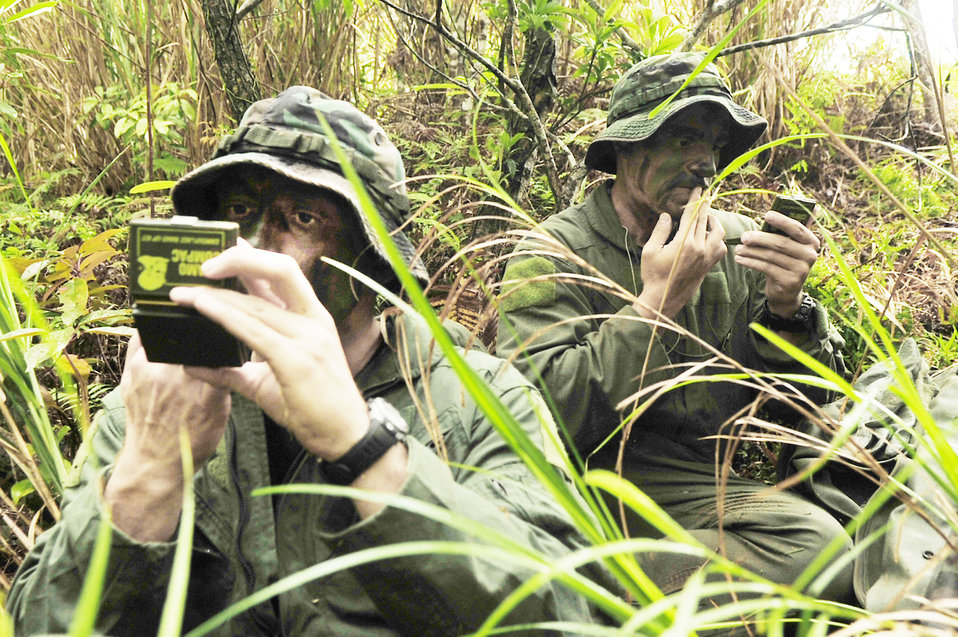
Getting a makeover

Capt. Aaron Wallace (left) and 1st Lt. Joseph Bisson, both pilots from the 909th Air Refueling Squadron, apply camouflage during an evasion exercise March 25, 2010, after a KC-135